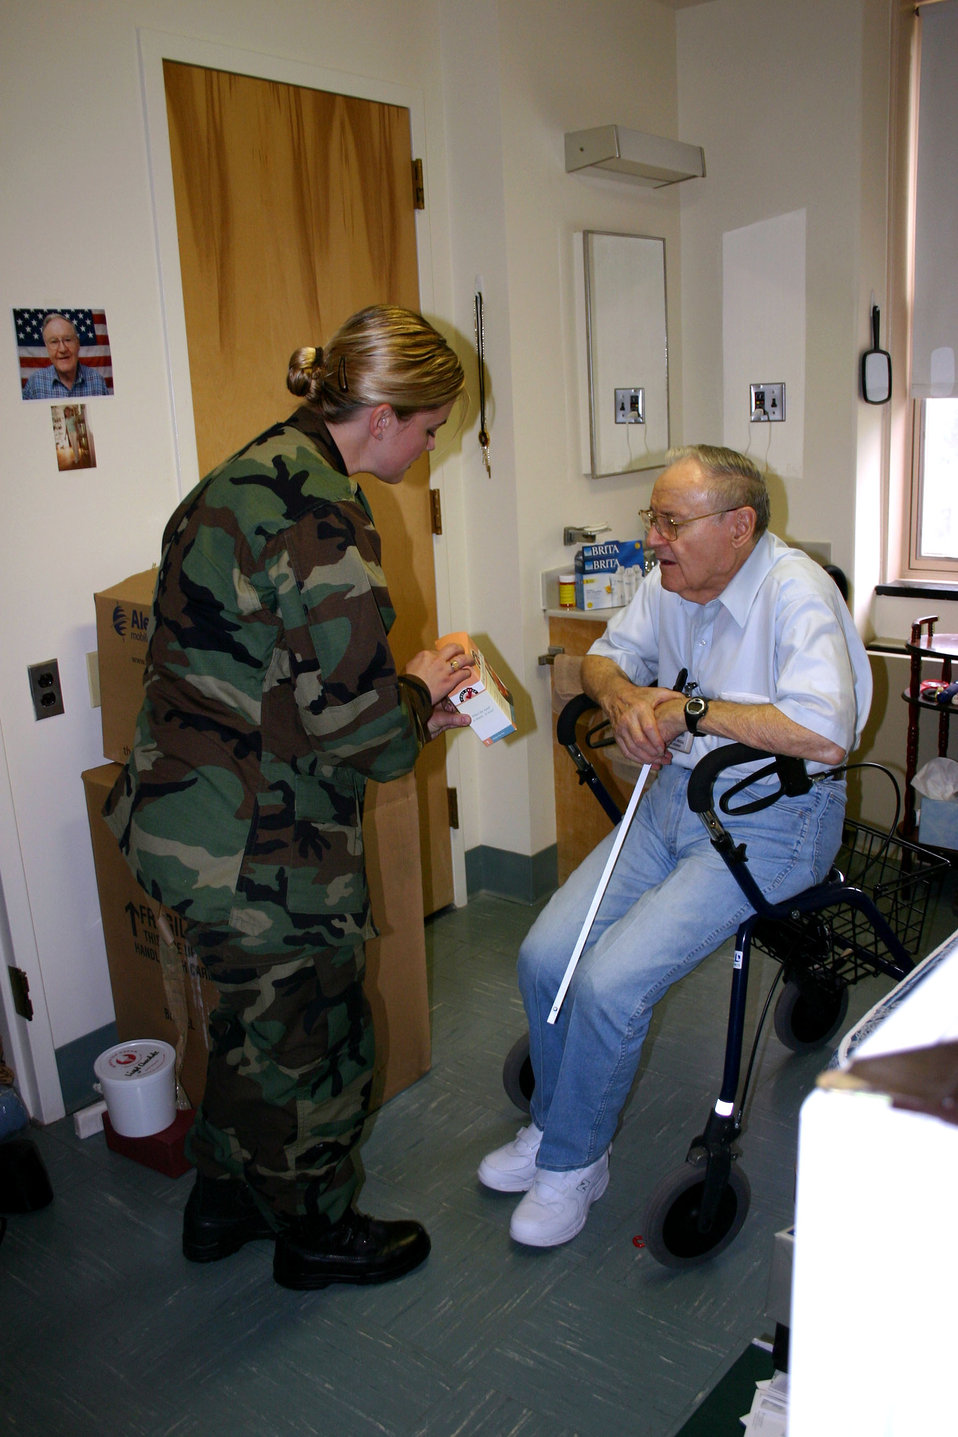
Gulfport evacuees receive helping hand

Capt. Lisa Reaver helps Leonard Drozal unpack his belongings at the Armed Forces Retirement Home in Washington, D.C., on Thursday, June 15. Mr. Drozal, a World War II Marine Corps veteran, evacuated here when the retirement home in Gulfport, Miss., was damaged during Hurricane Katrina. Captain Reaver is assigned to the Air Force Intelligence Analysis Agency.